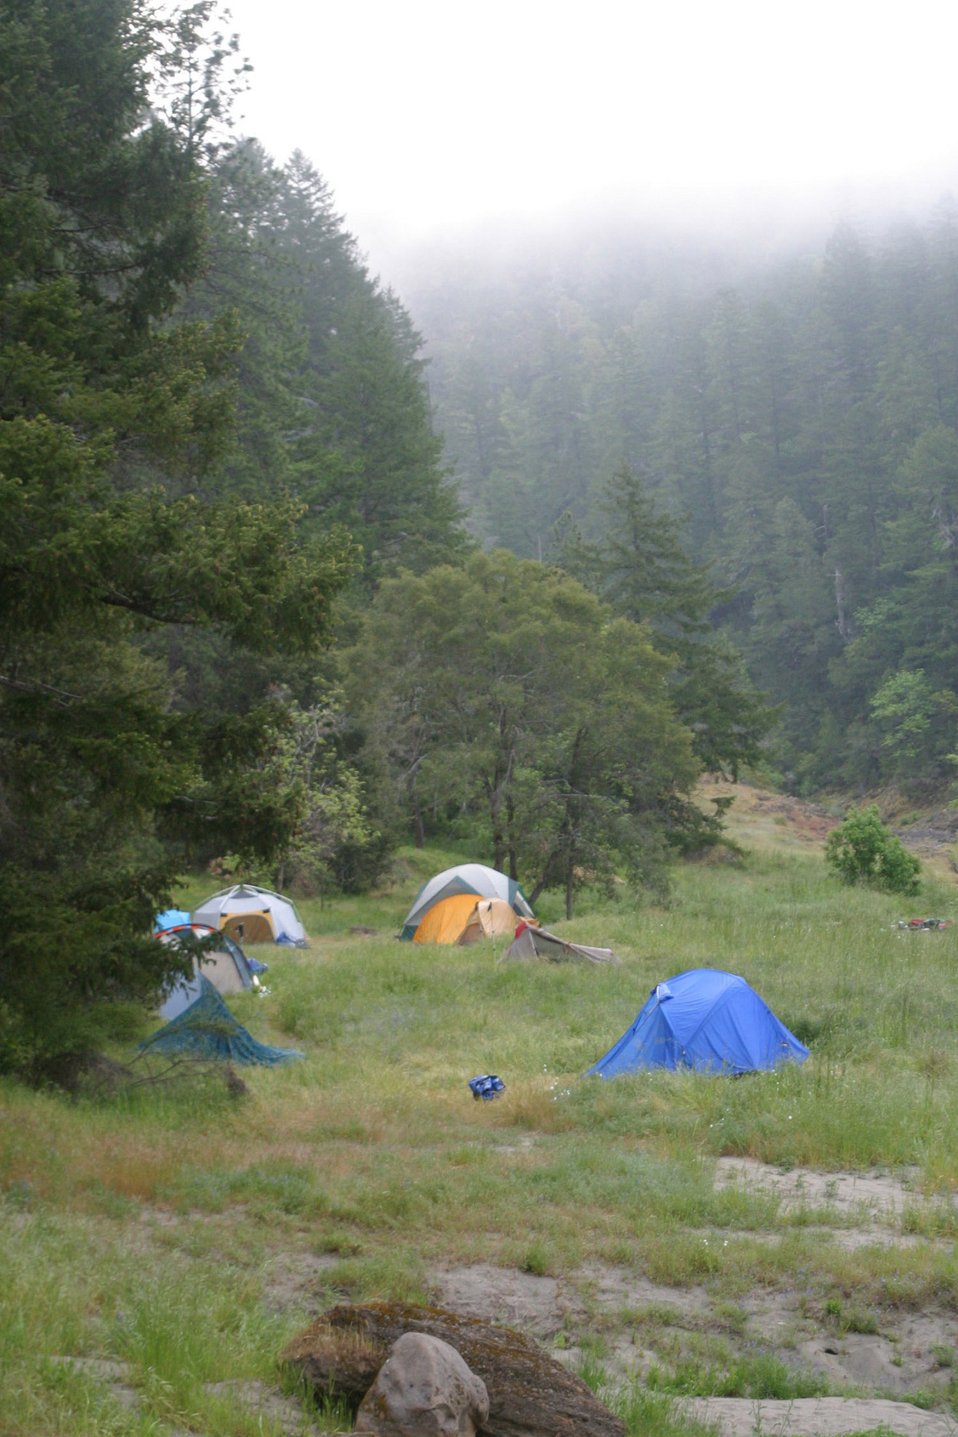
Wild section of the Rogue River from Grave Creek to Foster Bar May 19 to May 22.